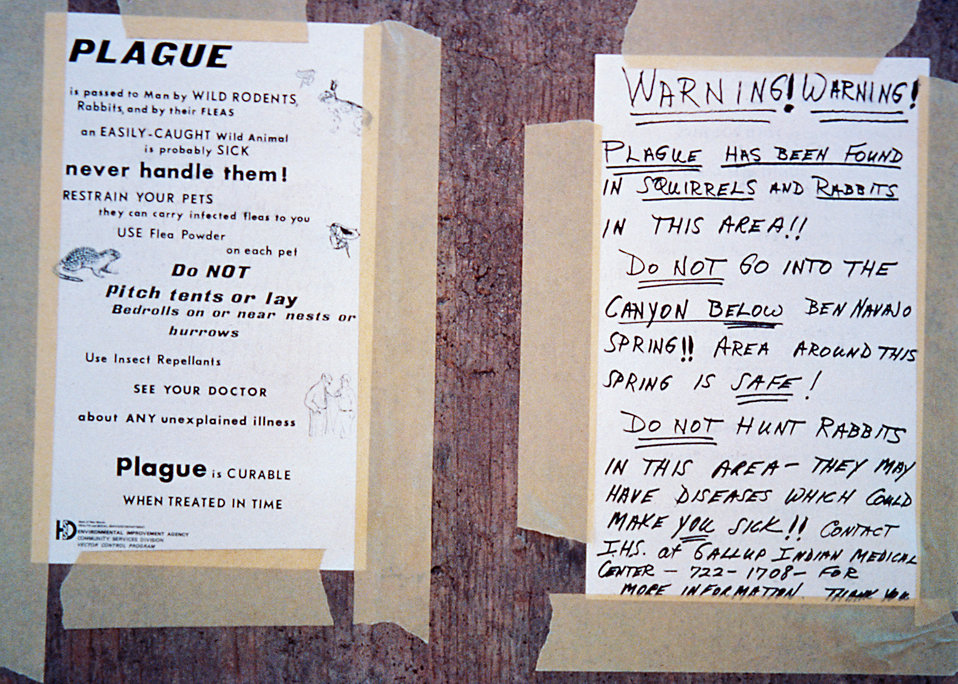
Plague warning signs are posted in regions where plague has been discovered.